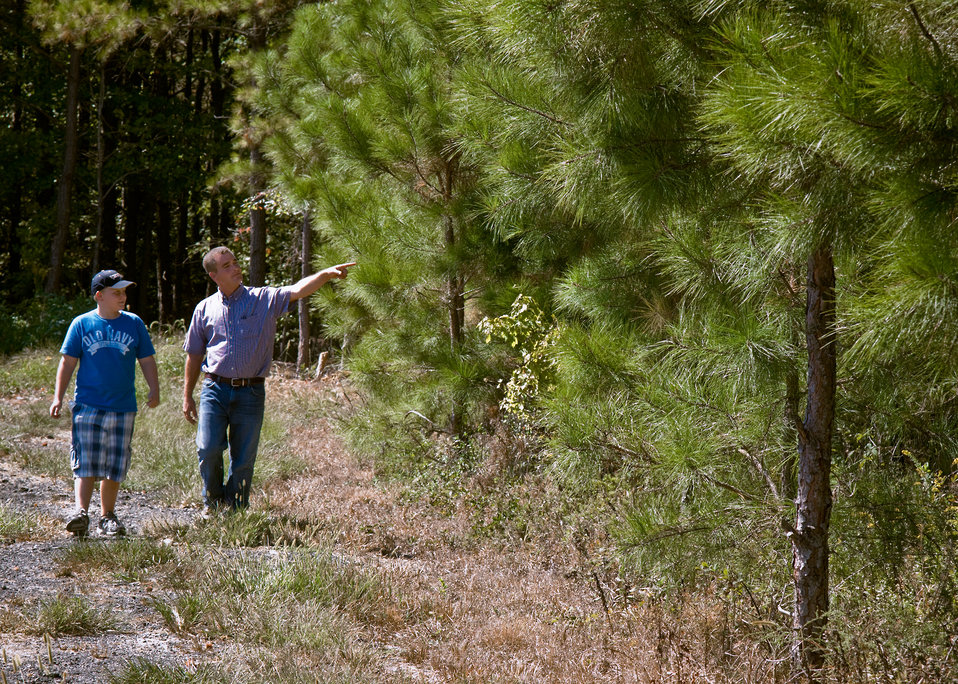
Buzz Spicer (left) listens to his brother Jason Spicer (right) explain the investment and process of maintaining a pine forest. Buzz and Jason are the fifth generation of the Spicer family to follow the family farming business Holly Lane farms in Church Creek, Maryland. The farm is in a Chesapeake Bay Watershed Initiative (CBWI) priority watershed and drains into the Department of Interior Blackwater National Wildlife refuge to Fishing bay and then to the Chesapeake Bay. The family has used a Technical Service Provider (TSP) through the Natural Resources and Conservation Service to develop their pest and nutrient management plans. The event took place on Monday, September 20, 2010. USDA Photo 10di1497-40 by Bob Nichols.